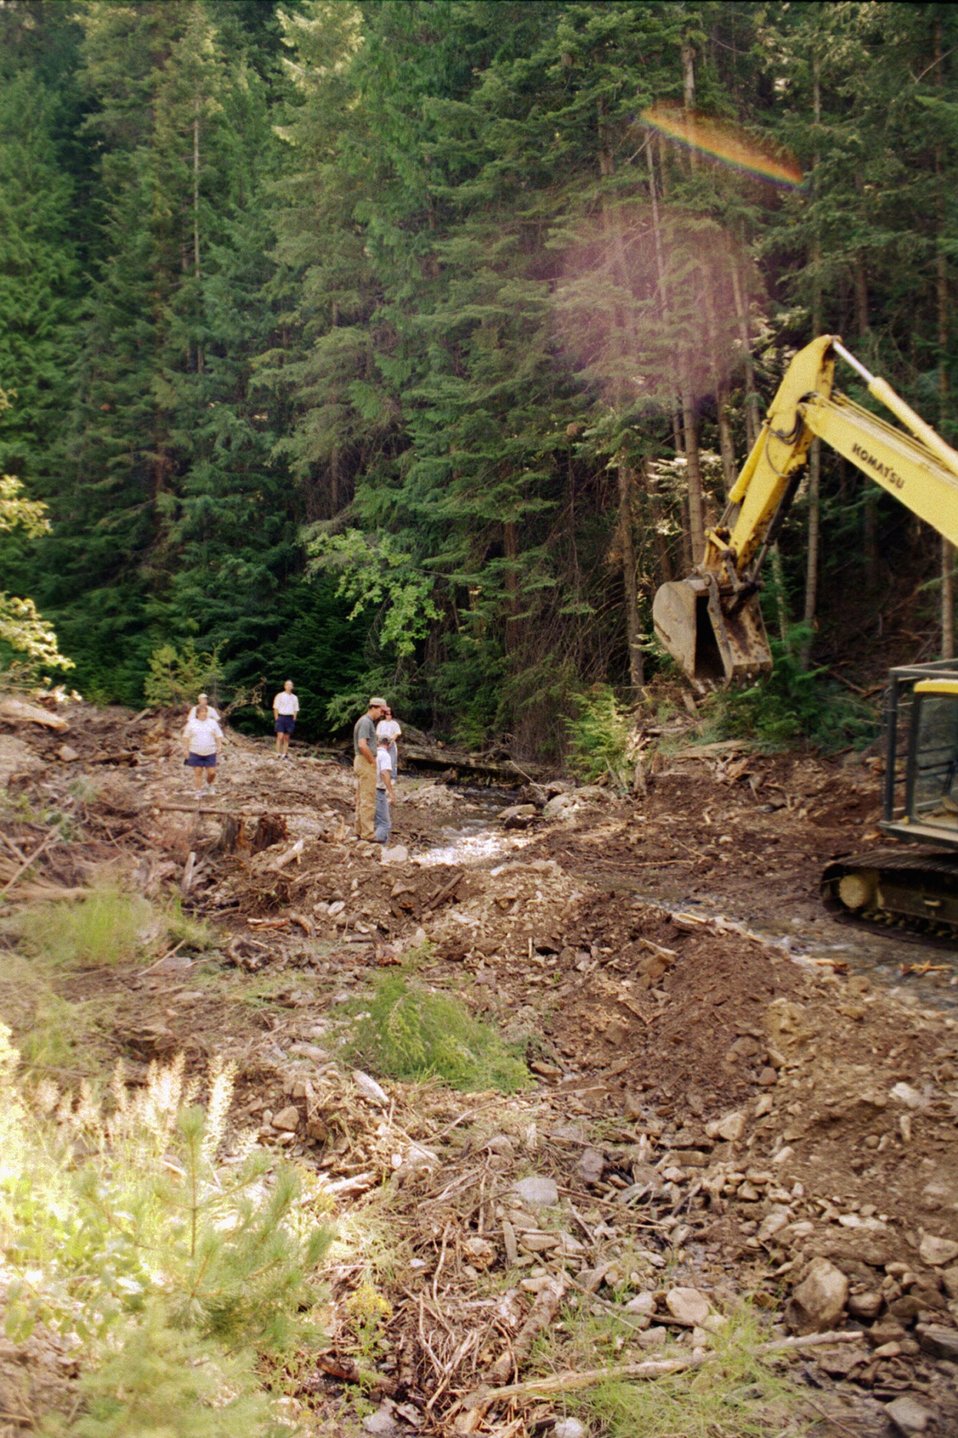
Riparian Area Stream Restoration from mining damage near Pinecreek Couer D'Alene Field Office UCSC Upper Columbia Salmon Clearwater District